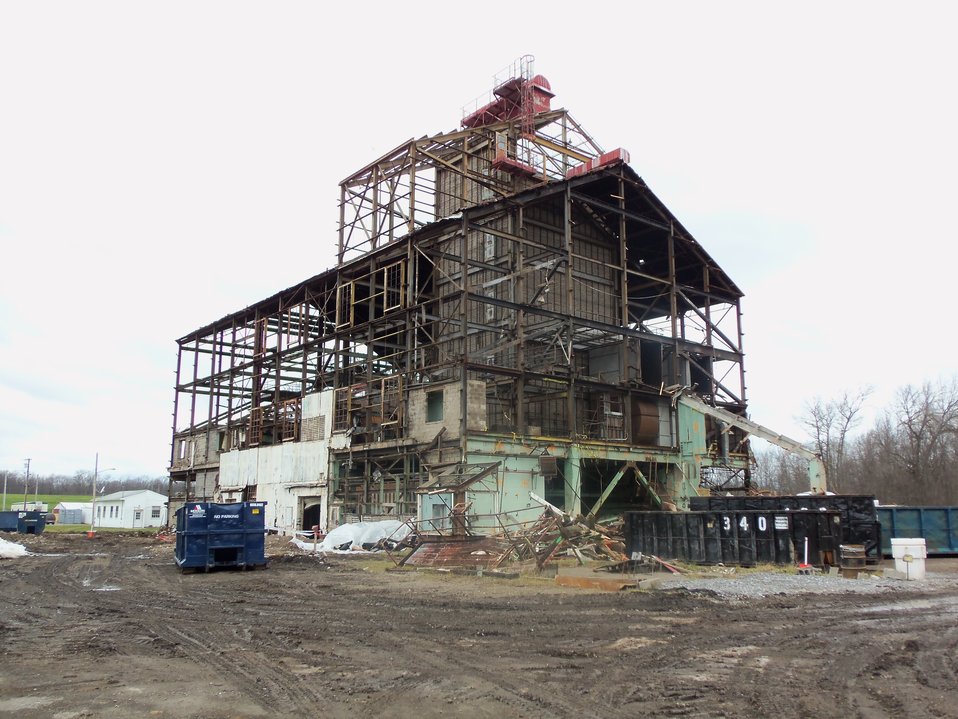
Building 401 shell.

Activities from the Niagara Falls Storage Site, which is associated with the former Lake Ontario Ordnance Works. Formerly Utilized Sites Remedial Action Program (FUSRAP), a program initiated in 1974 to identify, investigate and clean up or control sites that were part of the Nation's early atomic energy and weapons program. Activities at the sites that are eligible for FUSRAP were conducted by Manhattan Engineer District (MED) or the Atomic Energy Commission (AEC), both predecessors of the Department of Energy (DOE). The U.S. Army Corps of Engineers was assigned management of FUSRAP by Congress in 1997.